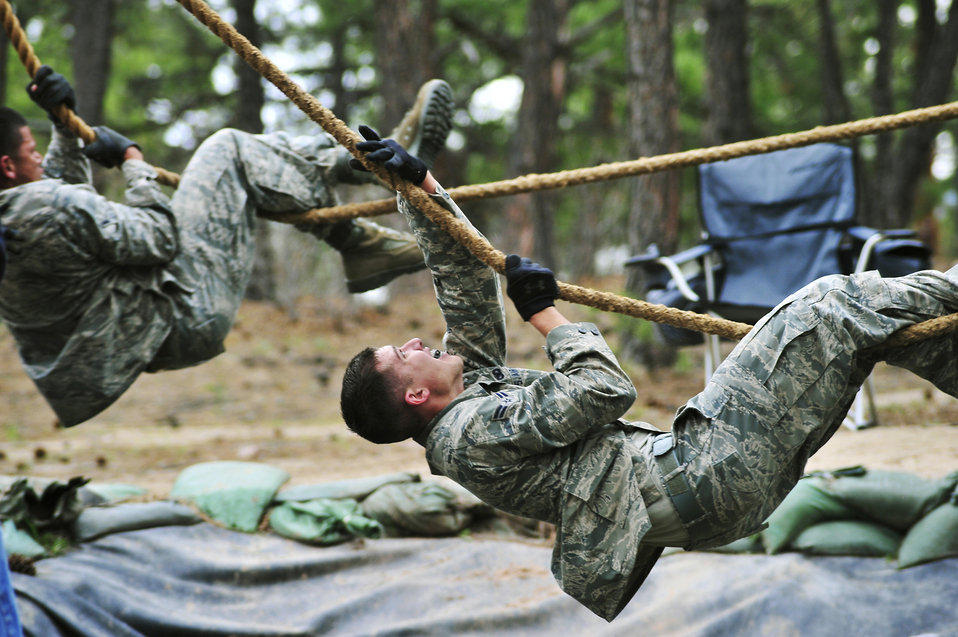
He has a lot of pull

Airman 1st Class Christopher Uremovich pulls himself hand over hand across a water hole at the U.S. Air Force Academy May 19, 2010, during Air Force Space Command's Guardian Challenge 2010. Airman Uremovich is with the 460th Security Forces Squadron at Buckley Air Force Base, Colo.